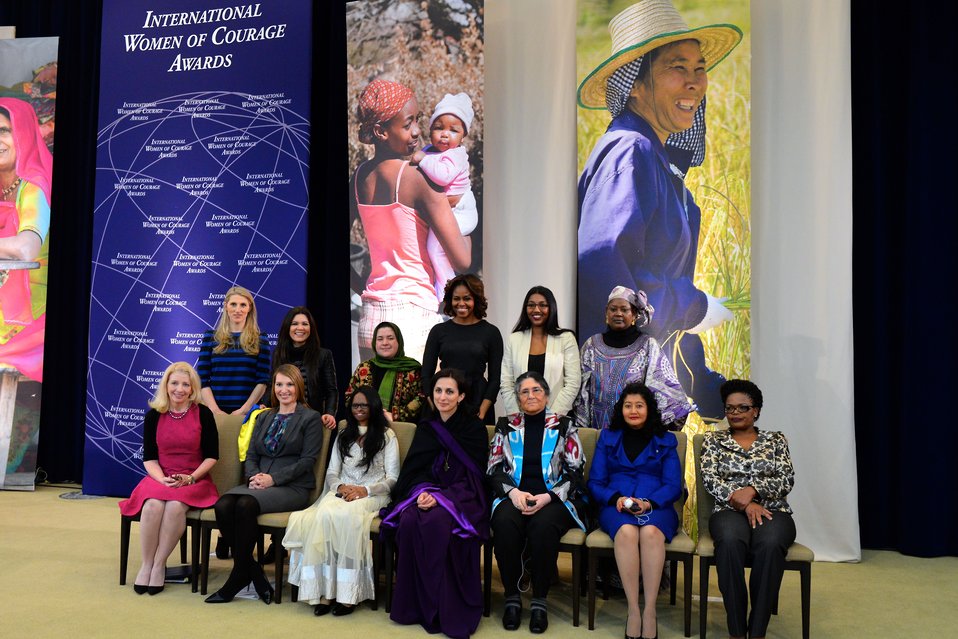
First Lady Michelle Obama, Deputy Secretary Higginbottom, and Ambassador Russell With 2014 IWOC Awardees

First Lady Michelle Obama, Deputy Secretary Heather Higginbottom, and U.S. Ambassador-at-Large for Global Women's Issues Catherine Russell pose for a photo with the 2014 Secretary of State’s International Women of Courage Awardees at the U.S. Department of State in Washington, D.C., on March 4, 2014.